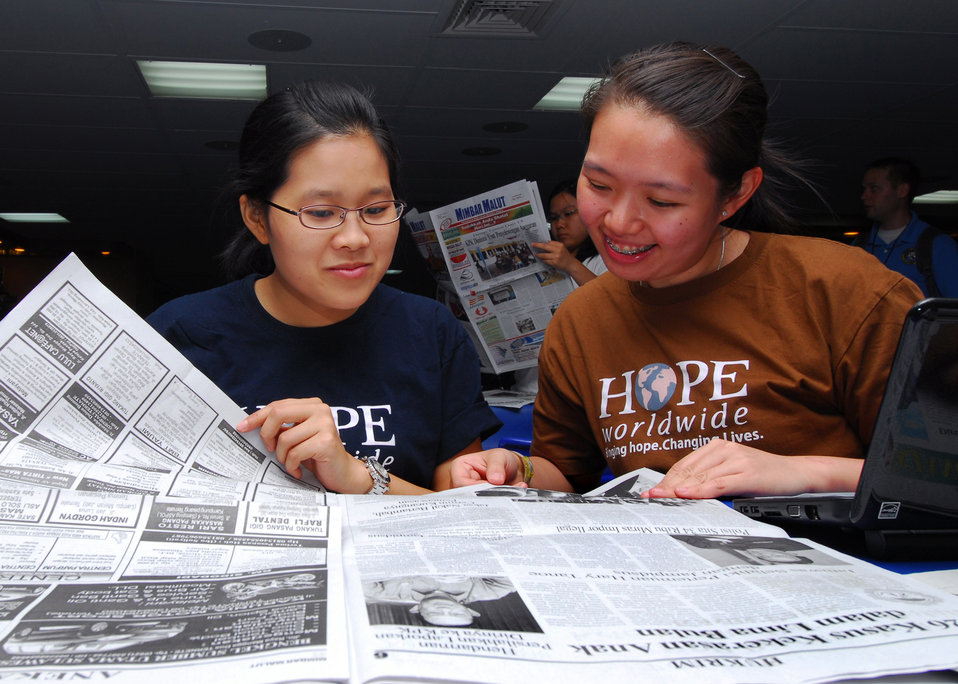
HOPE Worldwide Members Tan and Dewi Translate Indonesian Newspapers

HOPE worldwide members Lea Sutrisna Tan (left) and Nani Kumala Dewi translate Indonesian newspapers during the Military Sealift Command hospital ship USNS Mercy’s (T-AH 19) transition through Indonesia on July 25, 2010. Mercy is in the North Maluku Islands conducting Pacific Partnership 2010, the fifth in a series of annual U.S. Pacific Fleet endeavors conducted in Indonesia as a disaster relief exercise aimed at strengthening regional partnerships.